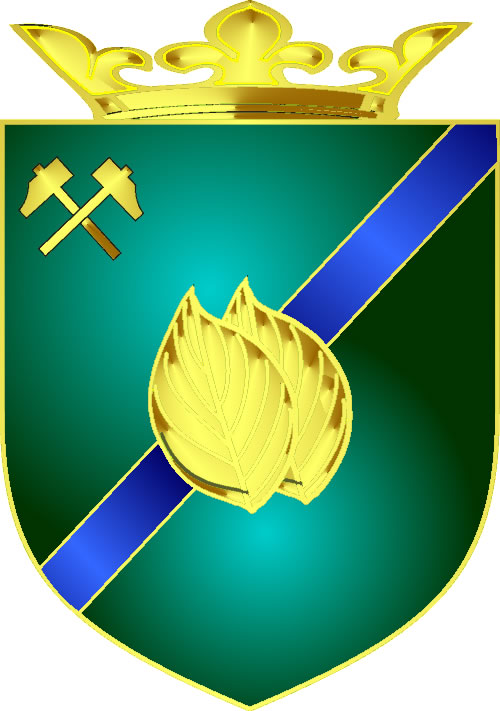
Coat of arms of Radoviš municipality.